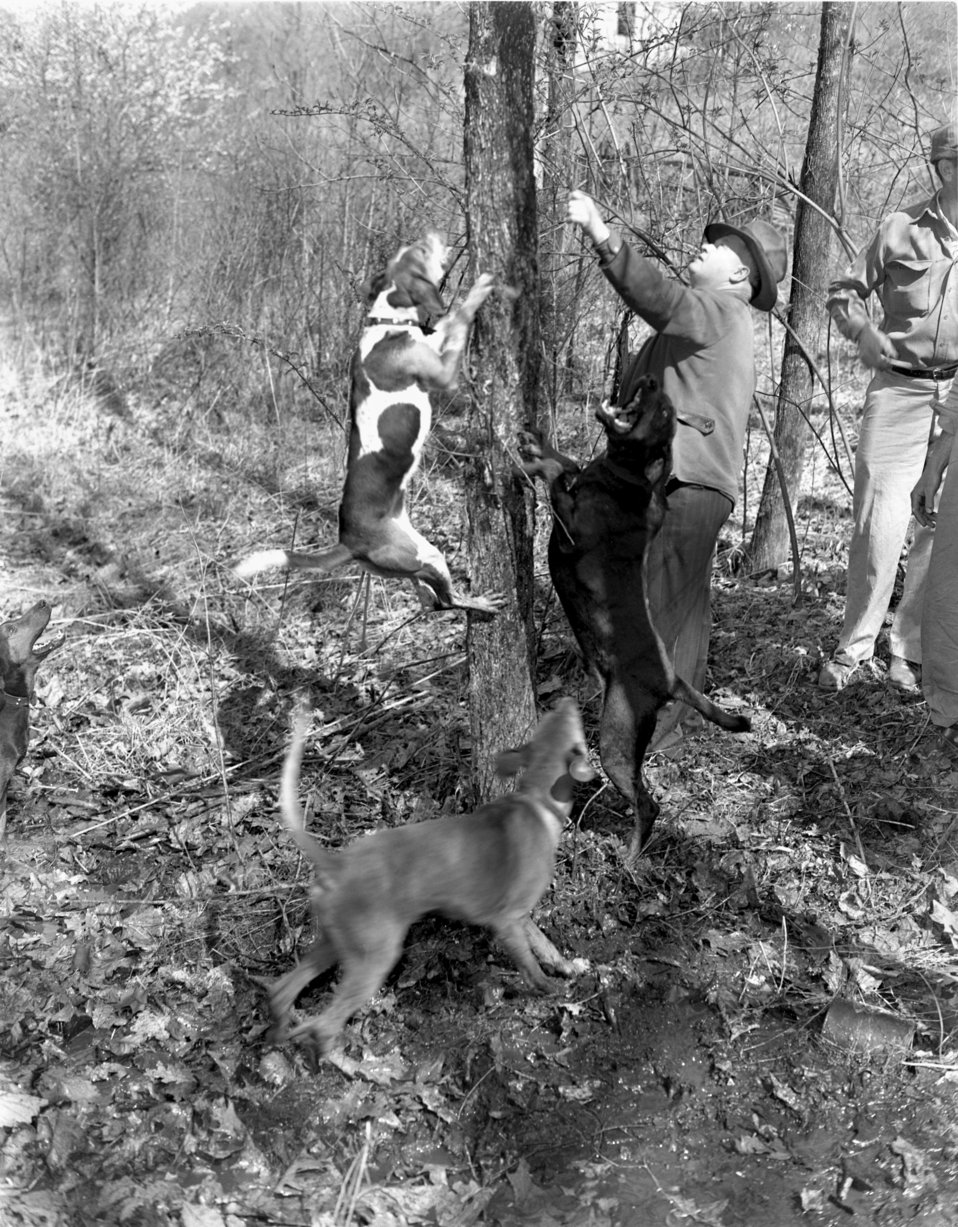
Coon Hunt (Raccoon Hunting) Oak Ridge 1947

3400-6b DOE photo Ed Westcott 4-12-1947 Oak Ridge Tennessee